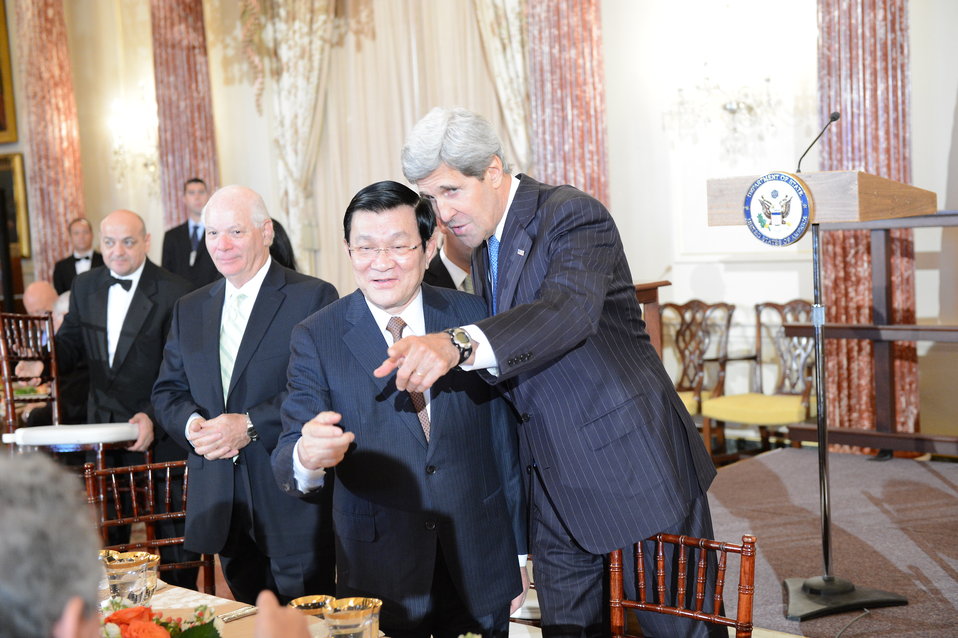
Secretary Kerry Introduces Vietnamese President Truong Tan Sang to Members of the U.S. Congress

U.S. Secretary of State John Kerry introduces Vietnamese President Truong Tan Sang to members of the U.S. Congress in attendance during their working lunch at the U.S. Department of State in Washington, D.C., on July 24, 2013.